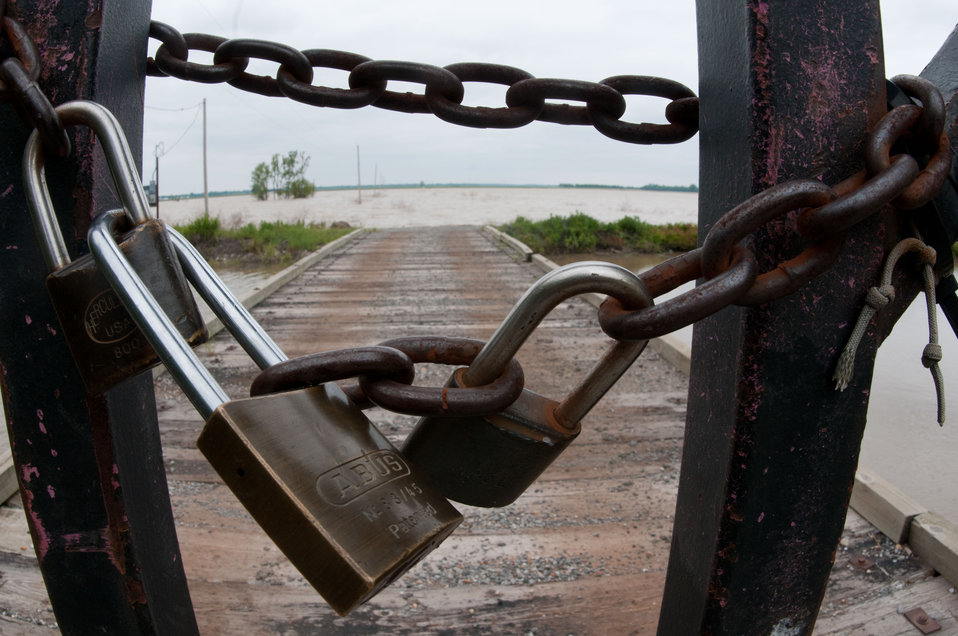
Floods waters from Mississippi River inundated casinos and farms that surround Tunica, MS, on Sunday, May 15. 2011.